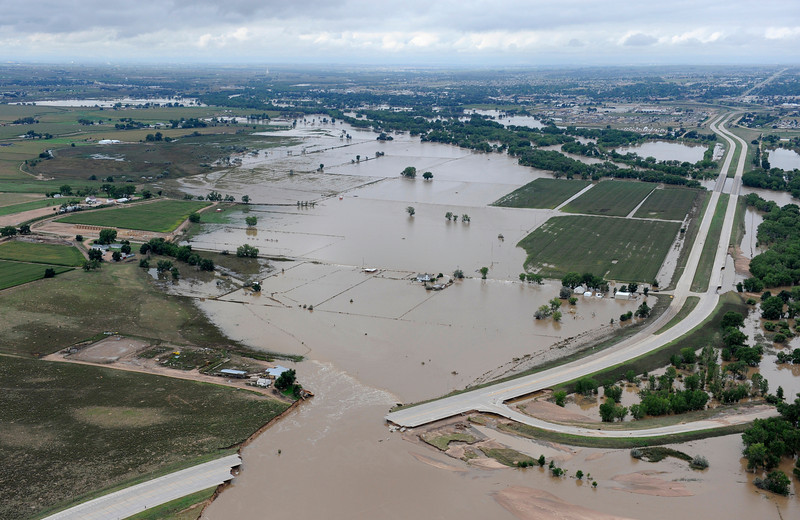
Greeley, CO, September 19, 2013

As a result of the flooding, the state lost approximately 500 miles of roadway and more than 30 bridges. Here, U.S. 34 in Greeley is breached by the South Platte River in flood stage.